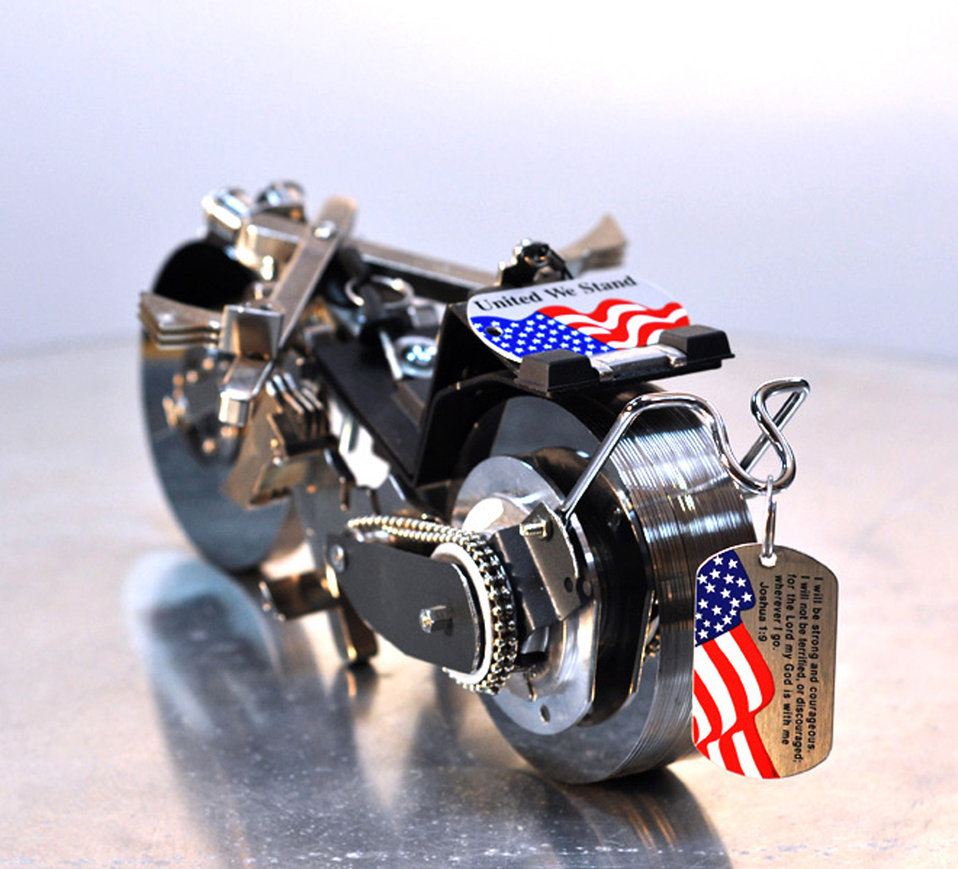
Old hard drive components become medium for unique artwork

Miguel Rivera created this motorcycle sculpture from old hard drive components. The dog tags were given to him by a Navy chaplain and he added them to the sculpture as a tribute to all servicemembers. Mr. Rivera is a 386th Expeditionary Communications Squadron systems administrator.